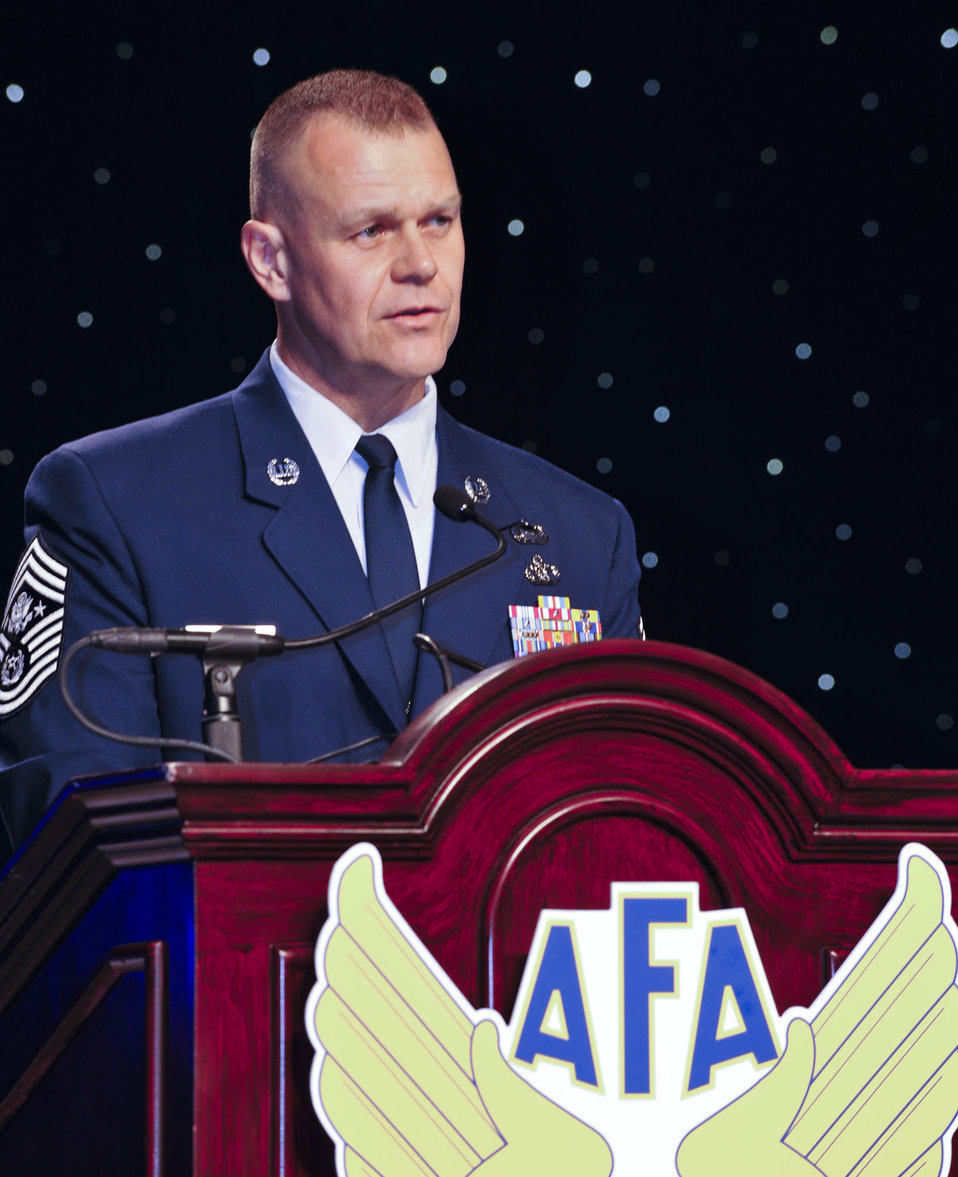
Outstanding Airmen honored at dinner

Chief Master Sgt. of the Air Force James Roy serves as the master of ceremonies during the Air Force Association's Outstanding Airmen of the Year dinner Sept. 13, 2010, in National Harbor at Oxon Hill, Md., The dinner was one of many events honoring the Airmen during AFA's Air and Space Conference and Technology Exposition.